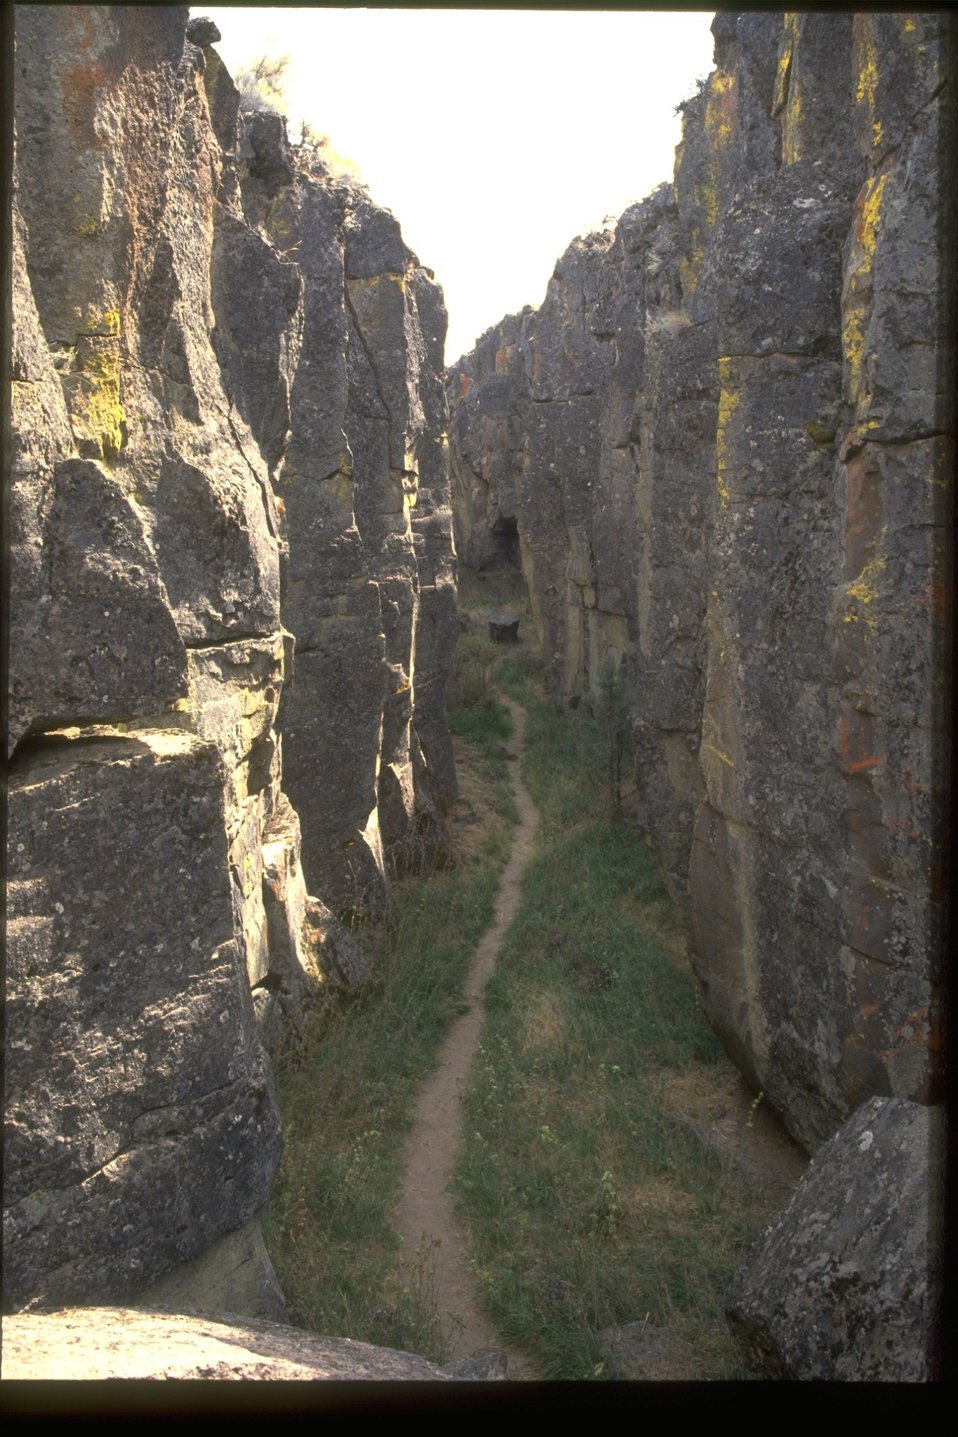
Crack in the Ground.